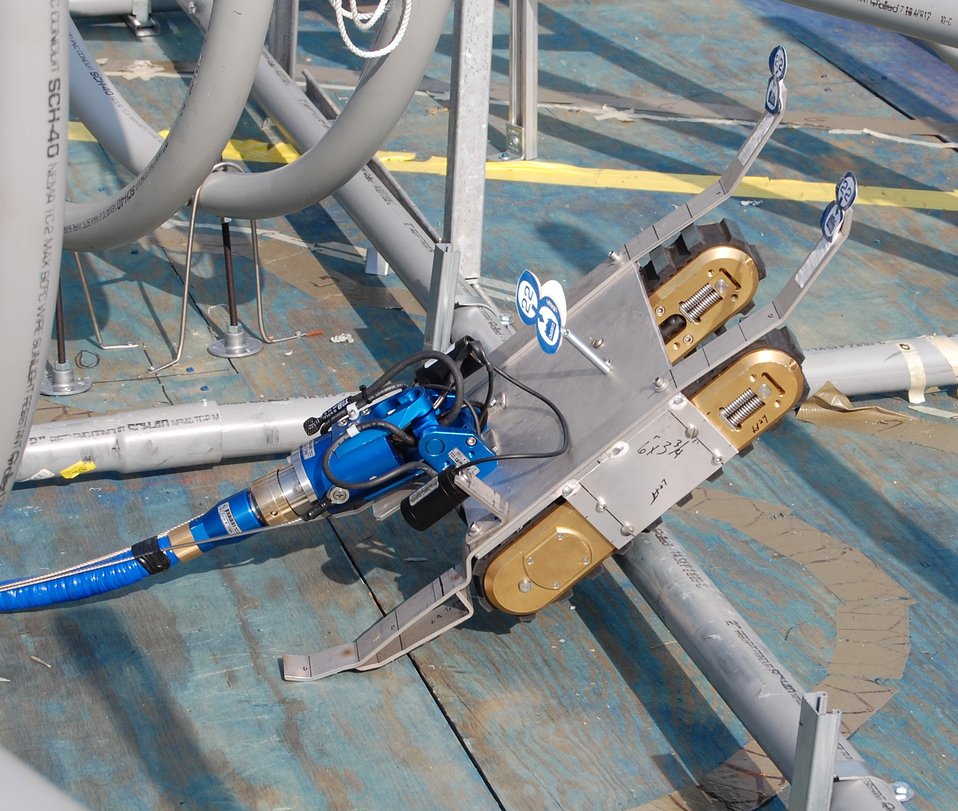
SRR - Tizzy

A robotic device named Tizzy was retrofitted by Savannah River Remediation (SRR) employees to collect and remove tank waste. Using $100,000 from the Recovery Act, SRR designed and built Tizzy. Here the robot is being tested on a mock-up of a waste tank.